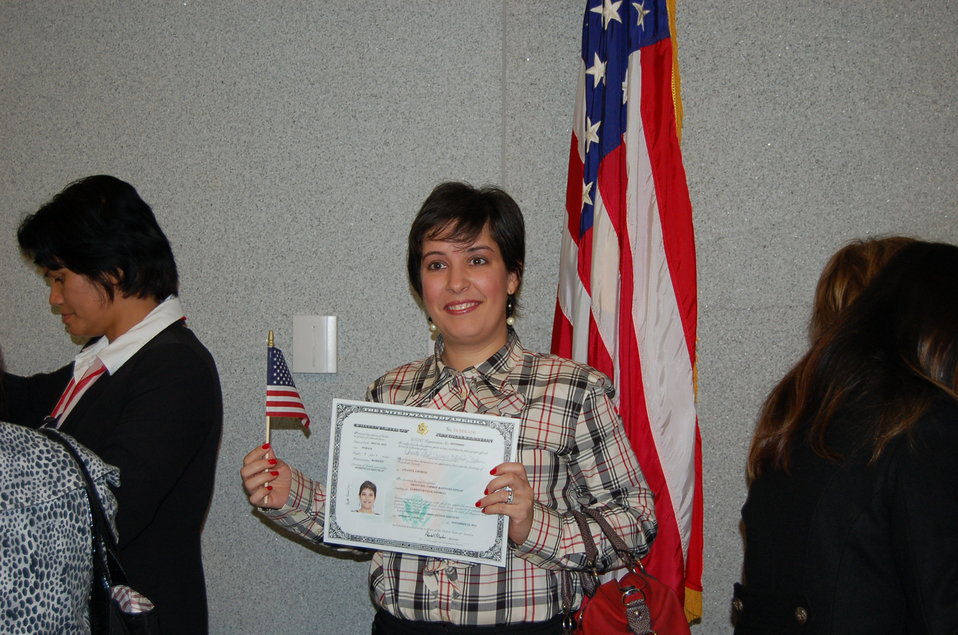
New Citizens